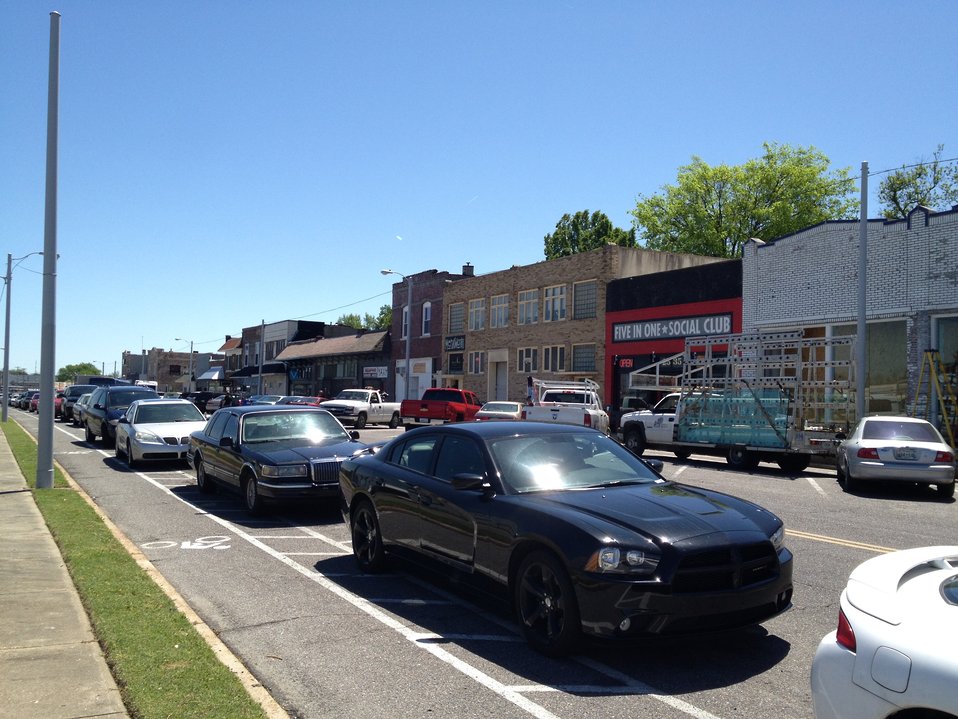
Broad Ave Bike Lane

Memphis is on the move! Bike lanes on Broad Avenue in Memphis are helping to relieve traffic and improve air quality.